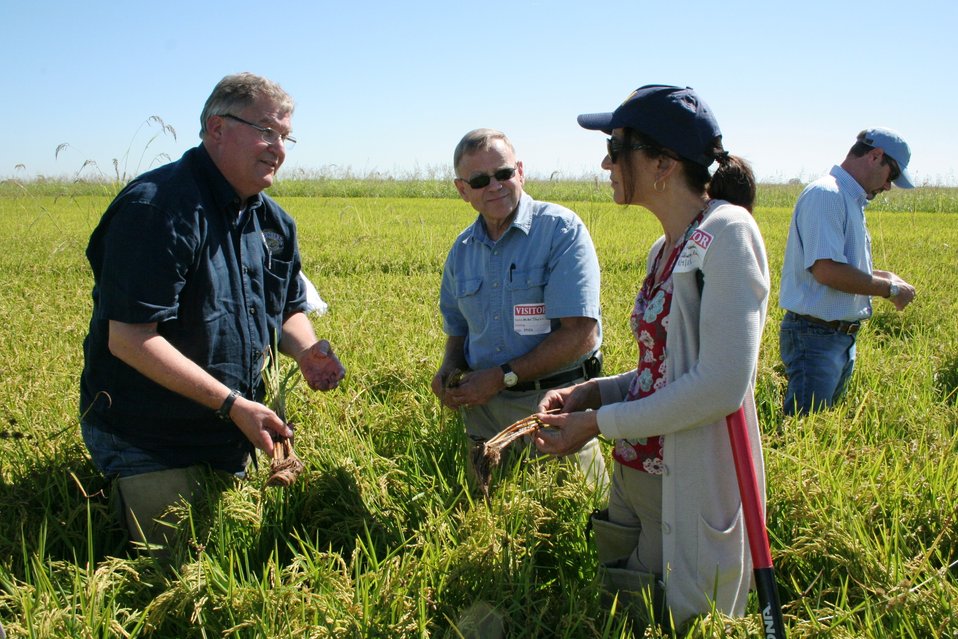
FDA's Rice Tour: Looking for Insights on Arsenic (0860)

FDA Commissioner Margaret A. Hamburg and colleagues visited research facilities and rice farms in California on Sept. 4-5, 2013 in an effort to gain a greater understanding of the presence of arsenic in rice. Here, Hamburg and Deputy FDA Commissioner for Foods and Veterinary Medicine Michael Taylor, center, don hip waders to go out into the rice fields at Lundberg Family Farms in Richvale, Calif. At left is Bryce Lundberg, the farms' vice president of agriculture, and at right is Mike Denny, vice president of farming operations. For more information, read the FDA Voice blog:

• On Farms and in Labs, FDA and Partners Are Working to Get Answers on Arsenic in Rice